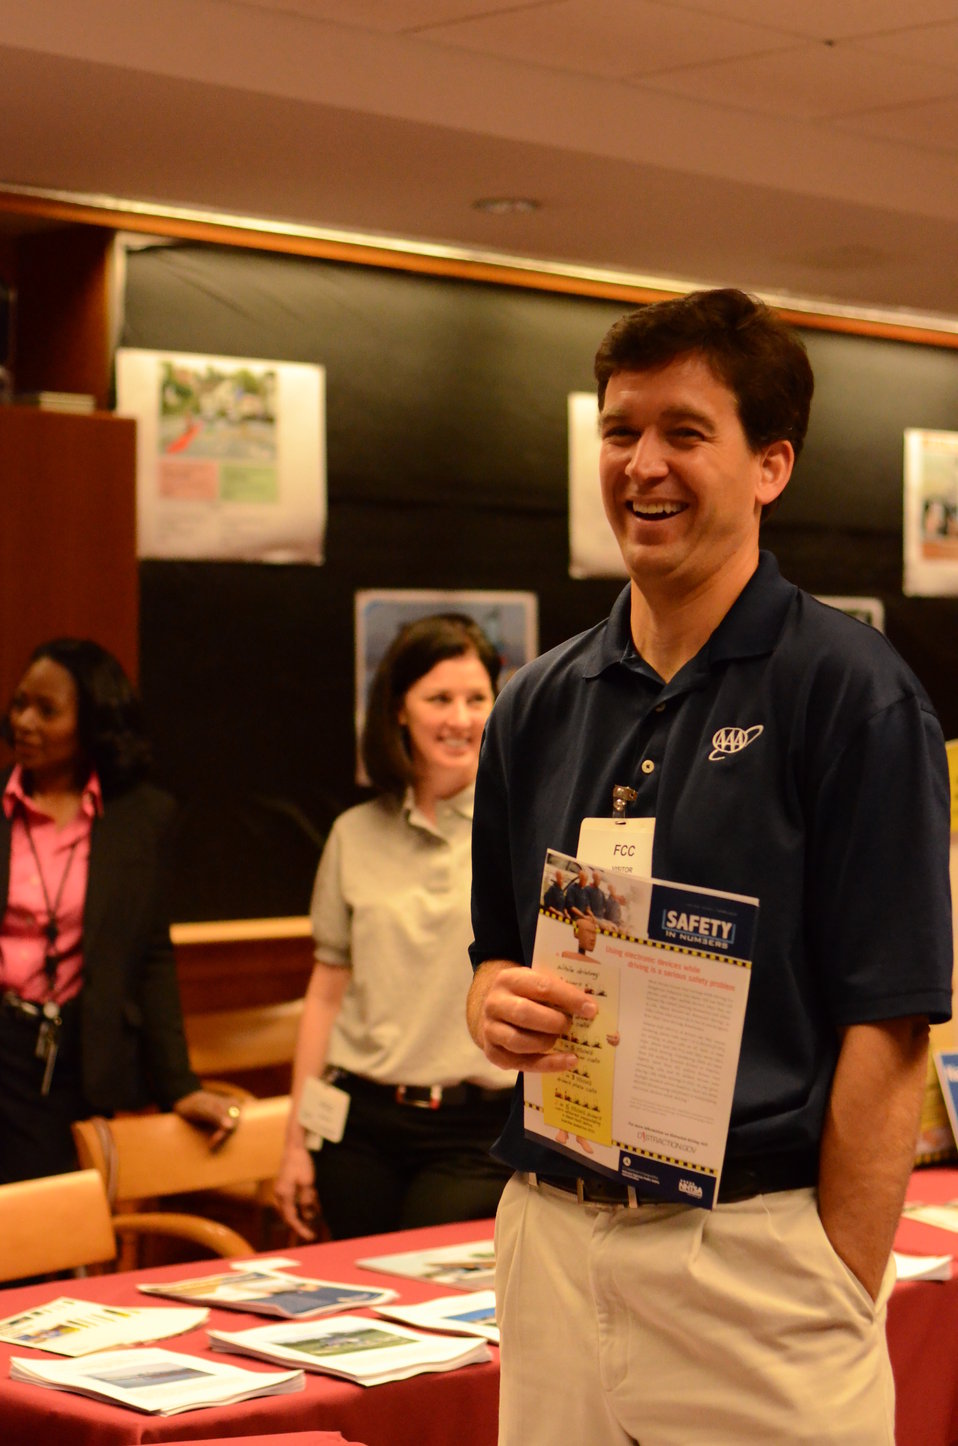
Distracted Driving Technology Showcase April 19, 2013